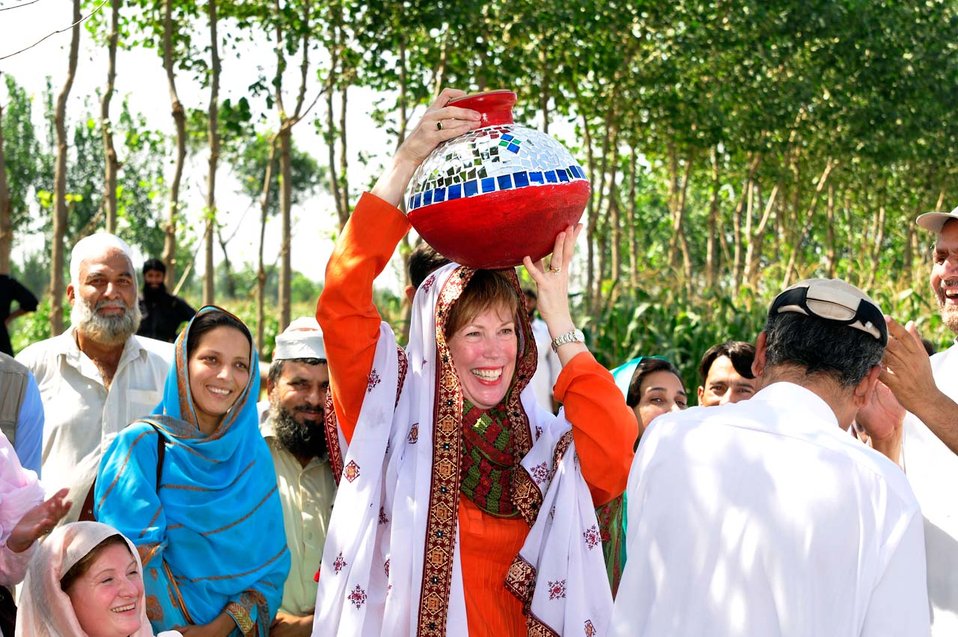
Dr. Marilyn Wyatt's Visit to the Flood-affected Farming Communities in Khyber Pakhtunkhwa